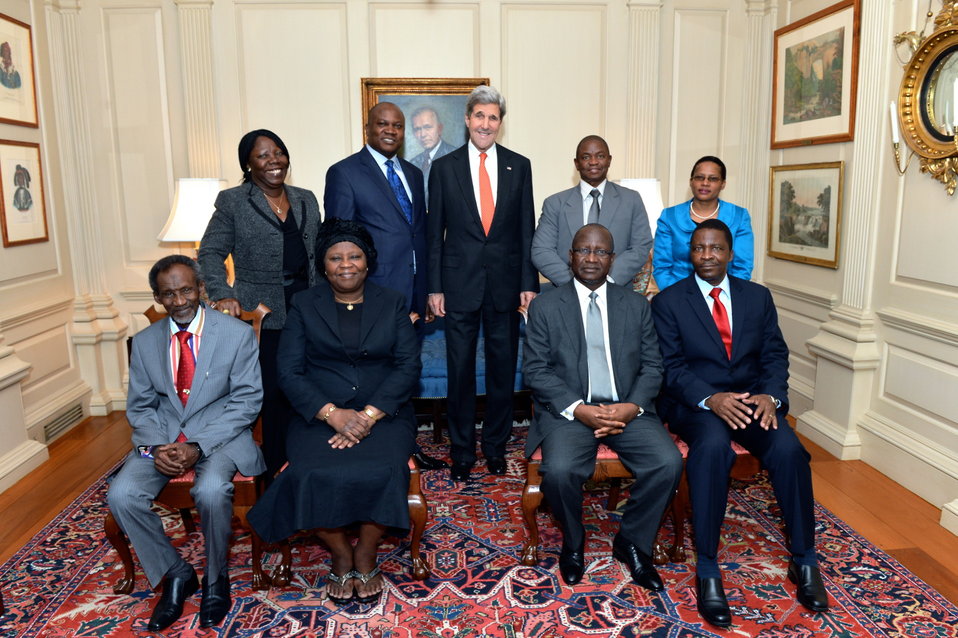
Secretary Kerry Meets With Chief Justices from Nigeria, Liberia, and Supreme Court Officials from Nigeria, Liberia, and Botswana

U.S. Secretary of State John Kerry Kerry meets with Chief Justices from Nigeria, Liberia, and Supreme Court Officials from Nigeria, Liberia, and Botswana at the U.S. Department of State in Washington, D.C., on April 9, 2014.